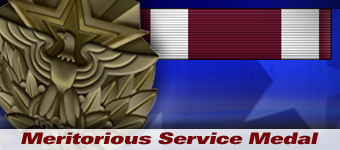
Meritorious Service Medal history spotlight .